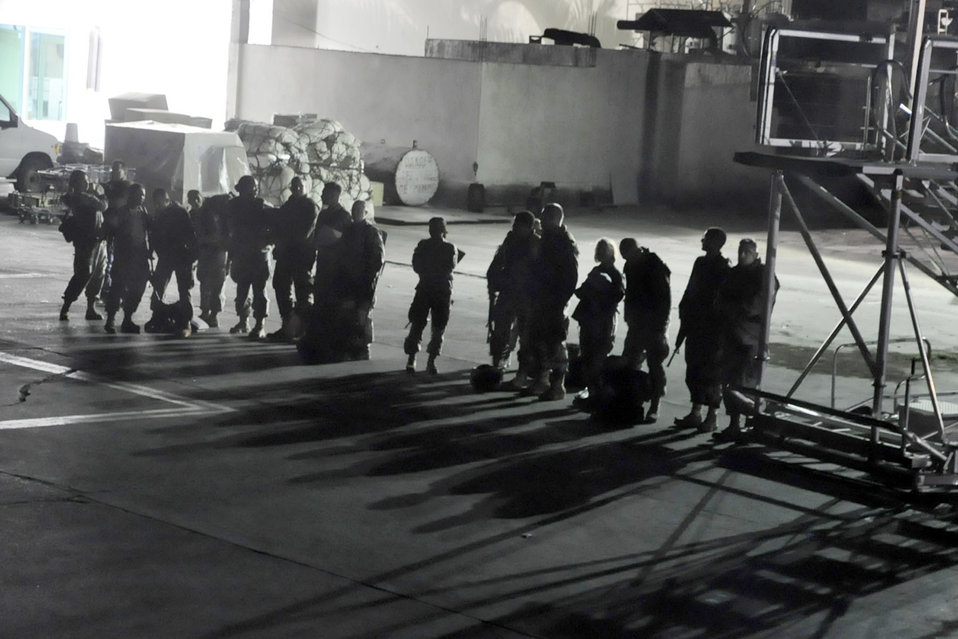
Medical mission to Haiti

After arriving from Soto Cano Air Base, Honduras, a group of U.S. military medical personnel wait outside a hangar at Toussaint L'Ouverture International Airport in Port-au-Prince, Haiti, Jan. 18, 2010. The medical group, consisting of U.S. Army and Air Force servicemembers was flown here by the Air Force Reserve Command's 910th Airlift Wing.